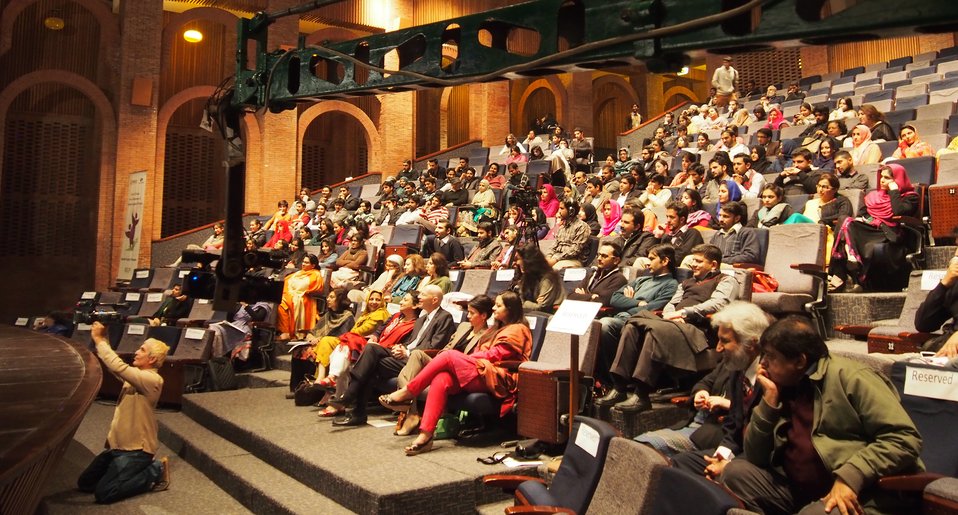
Social Media Event

Participants at a United States funded panel discussion on cyber-bullying today condemned the rising trend of cyber-crime against women and said that large number of Pakistani girls and women are victims of this kind of violence, which mainly includes cyber-stalking, blackmailing and pornography. They said that due to existing social norms, women are more vulnerable to the negative aspects of information technology.

The panel discussion, titled “Social Media: New Dimension of Violence against Women,” was part of the 16 Days of Activism campaign about violence against women. It took place at the Pakistan National Council of Arts and was sponsored by Aurat Foundation’s Gender Equity Program (GEP), which is funded by the United States government through U.S. Agency for International Development (USAID).